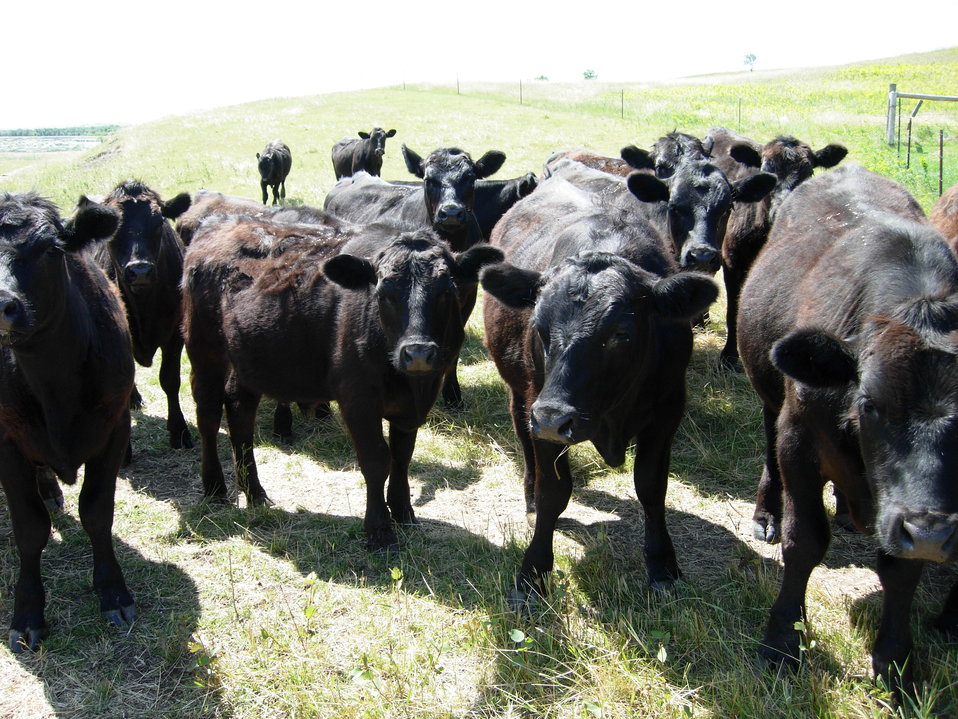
Grazing is used as a habitat management tool on Upper Souris Refuge today. It mimics the historial role bison played in prairie evolution.